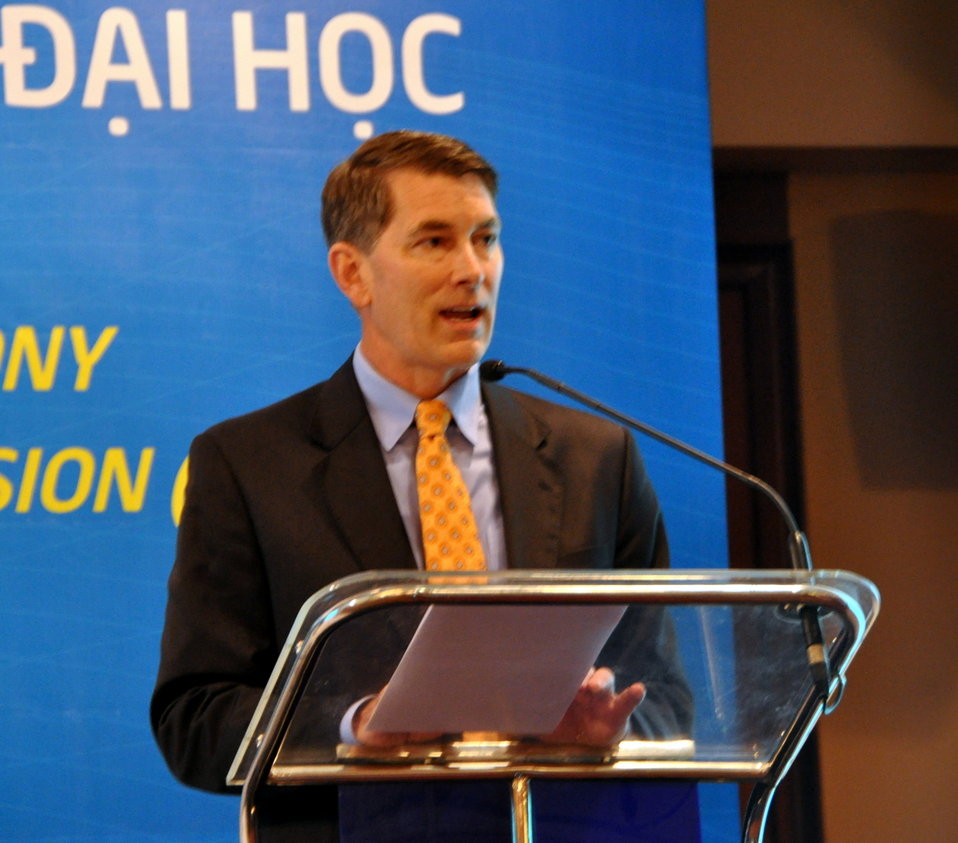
Rick Howarth, General Manager of Intel Project Vietnam, at the Higher Engineering Education Alliance Program Expansion Launch

Hanoi, August 20, 2012.